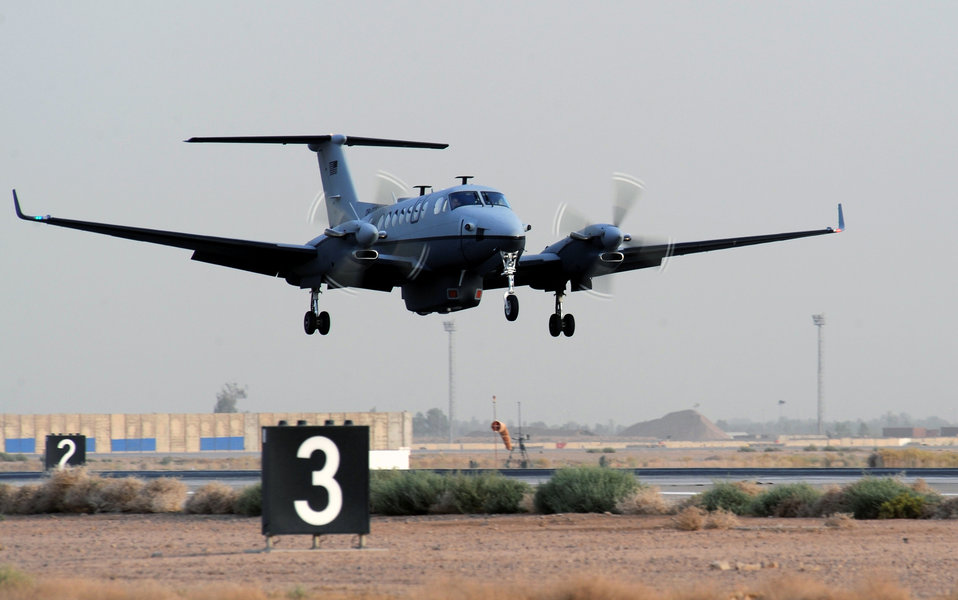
MC-12 aircrews complete 2,000th combat sortie

The MC-12 Liberty aircraft is the Air Force's newest intelligence, surveillance and reconnaissance platform. It is a medium-altitude manned special-mission turbo prop aircraft that supports coalition and joint ground forces.